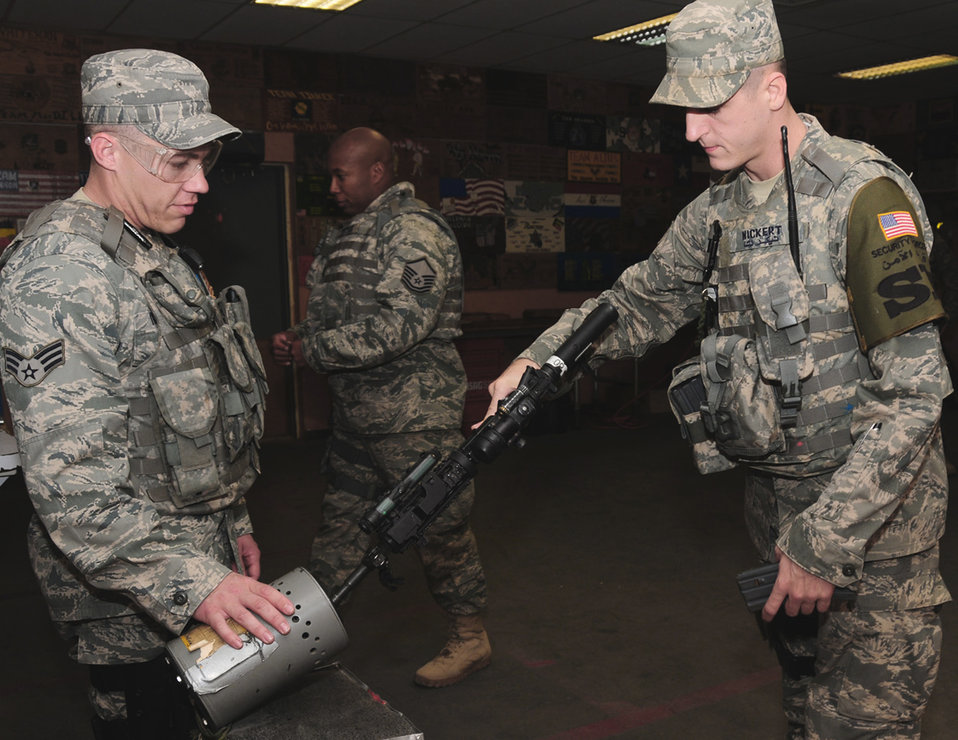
Security team provides safety net for Airmen

Staff Sgt. Nicholas Nickert (right) arms up and clears his weapon before heading out on a mission April 15 at an air base in Southwest Asia. He is a security escort team member assigned to the 386th Expeditionary Security Forces Squadron. SET team members are specially trained before deployment in defensive driving and personnel protection.